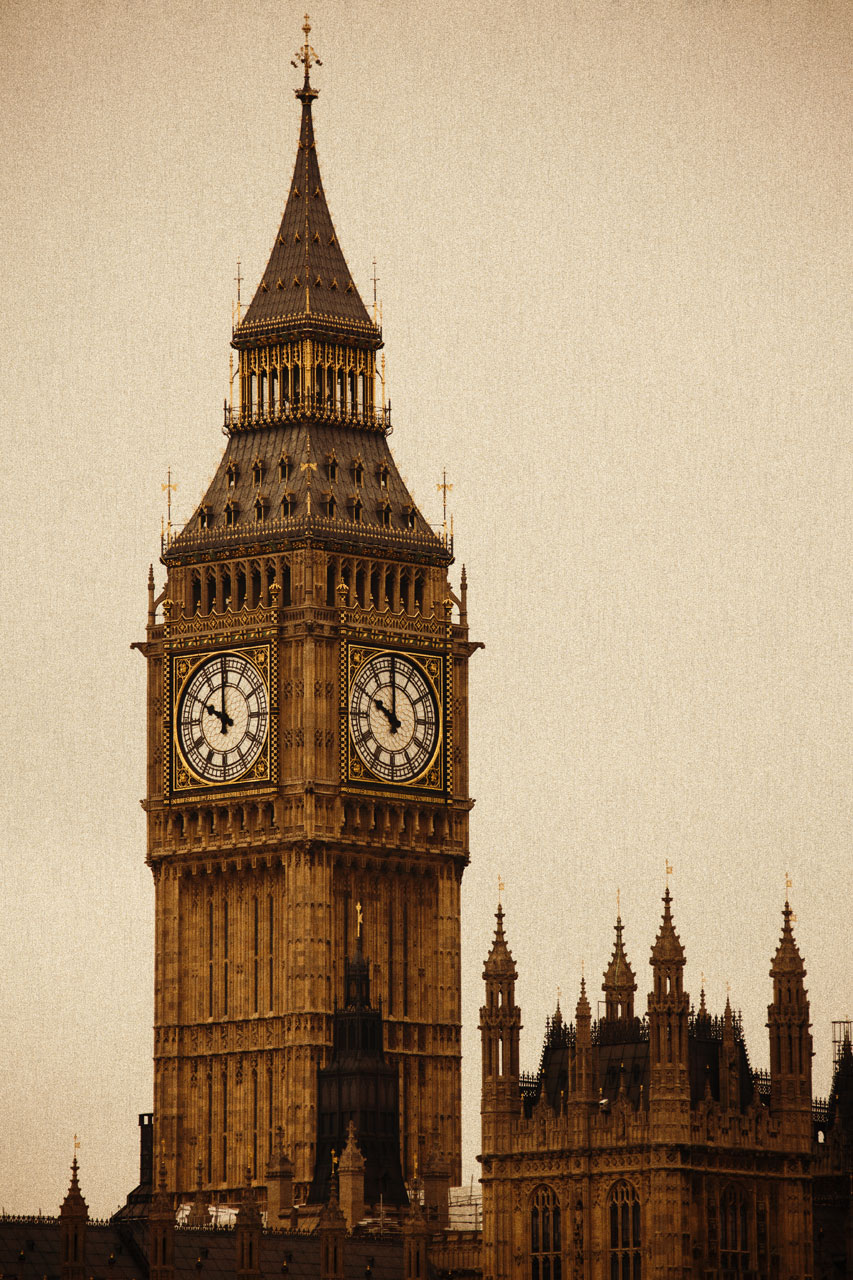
Sepia big ben

Ancient photo of a big ben.